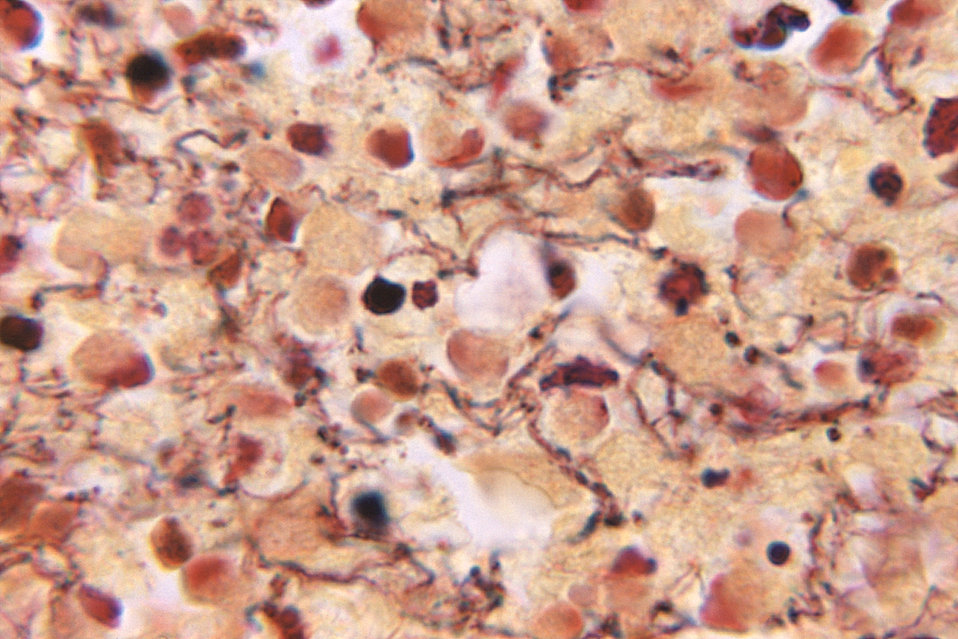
This Brown and Brenn stained brain abscess tissue sample reveals histopathologic changes due to Actinomyces naeslundii bacteria.